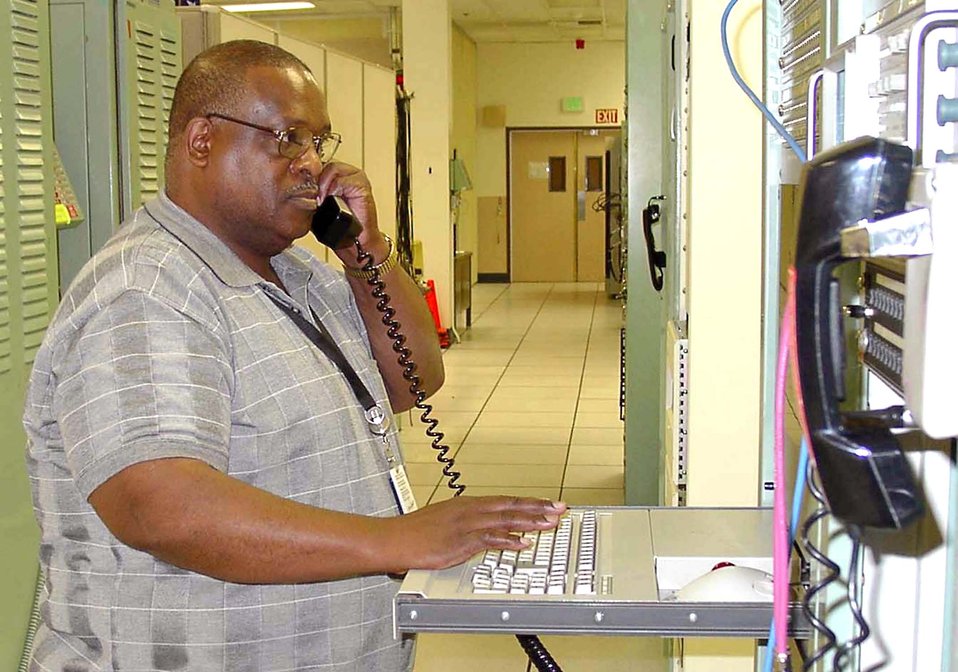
Contractor has supported every shuttle mission

ONIZUKA AIR FORCE STATION, Calif. (AFPN) -- Cliff Gatewood configures the programmable telemetry processor to send commands and receive health and status data from a shuttle. He has supported all 114 space shuttle missions launched by NASA. Mr. Gatewood is the liaison for operations, equipment maintenance, integration and logistics support for NASA's communications interface to Onizuka.